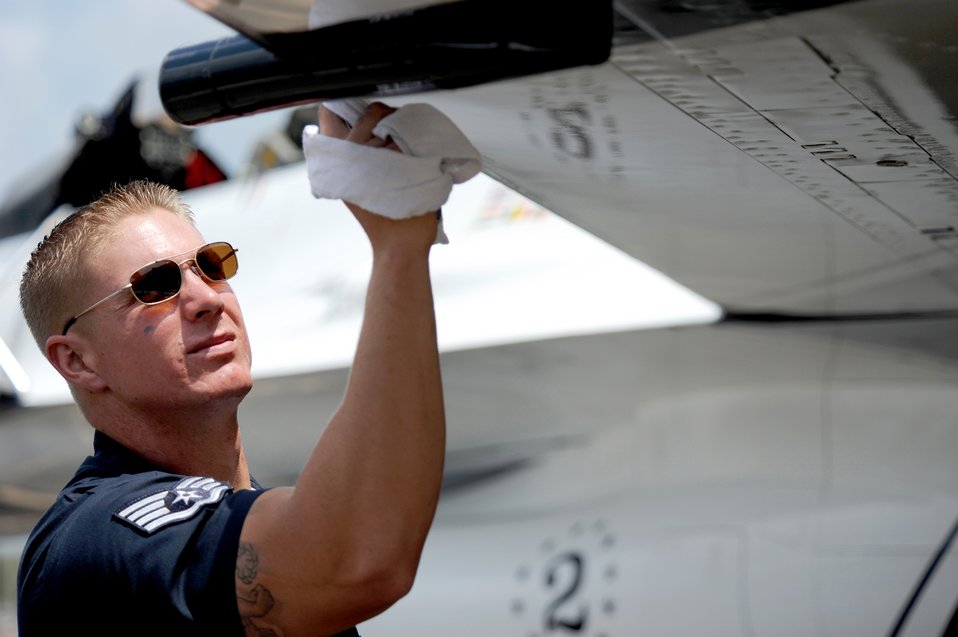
Look sharp

Staff Sgt. Raymond LeBlanc wipes down his jet after a practice show Mar. 31, 2011, in preparation for the Puerto Rico Air Extravaganza in Ceiba, Puerto Rico. Sergeant LeBlanc is a crew chief for the U.S. Air Force Thunderbirds.